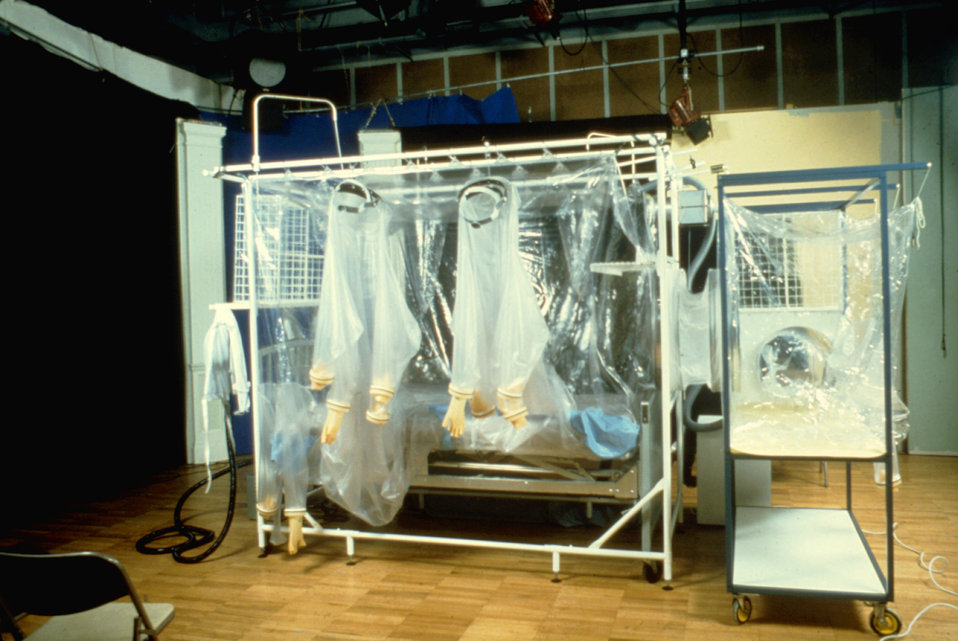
This 1977 photograph depicts a Vicker's Isolation Unit.